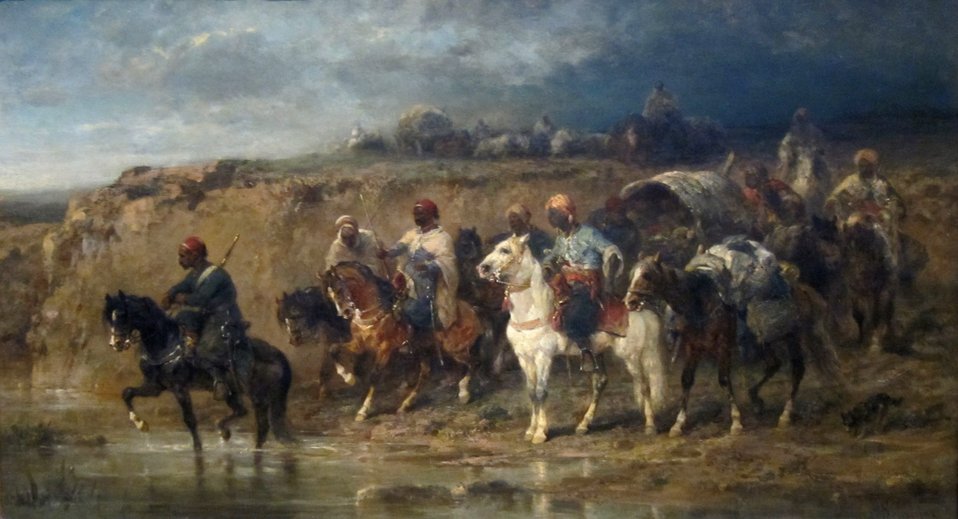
'Arab Caravan' by Adolf Schreyer, Dayton Art Institute